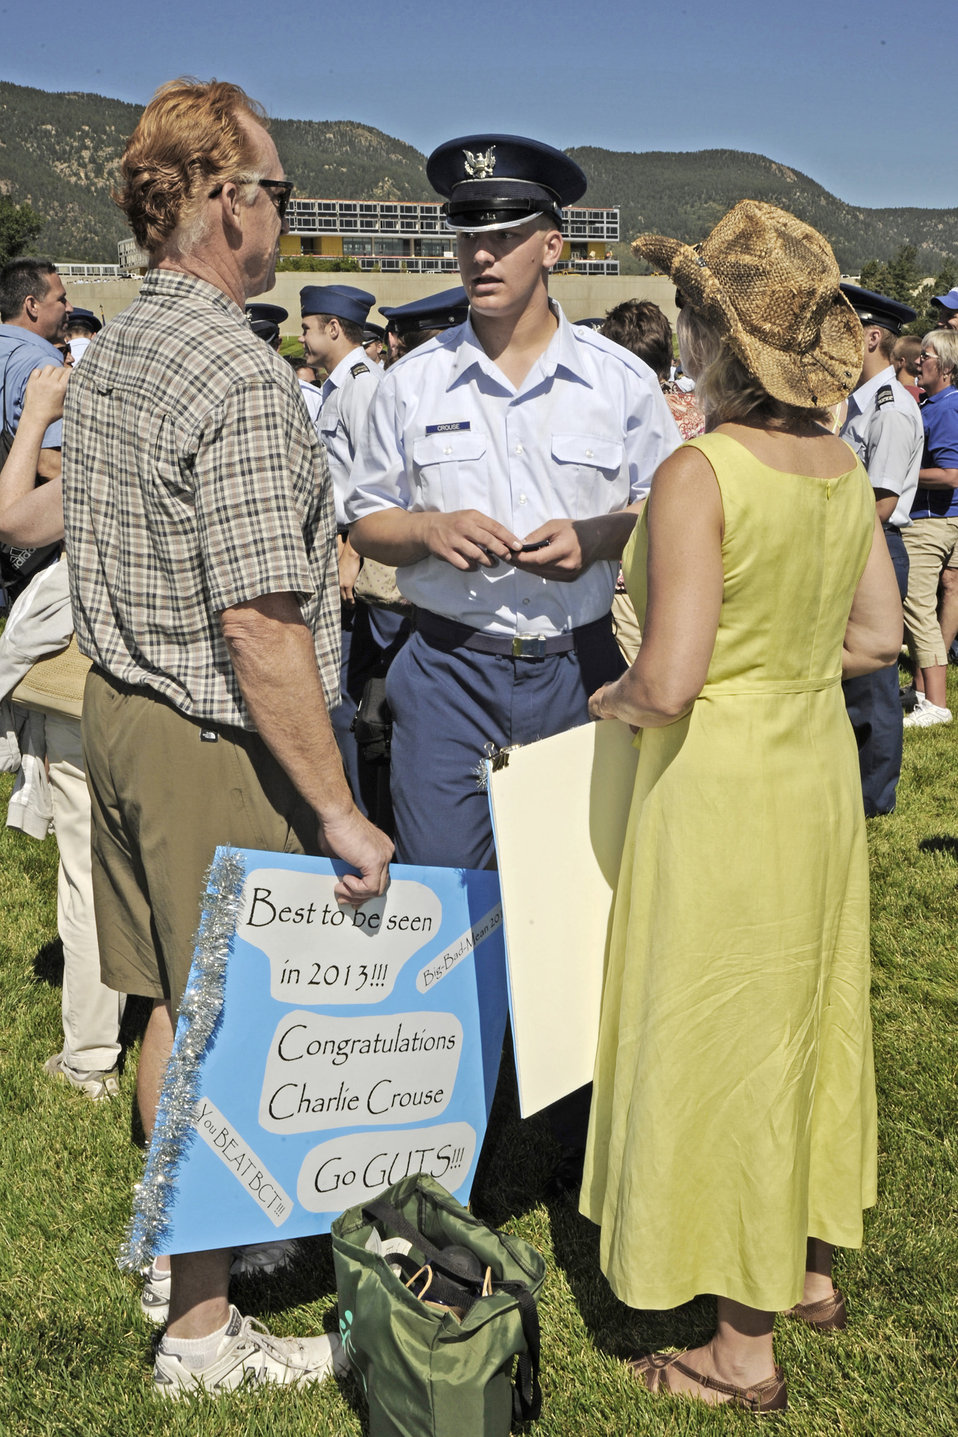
Acceptance Parade

USAF ACADEMY, CO--Cadet 4th Class Crouse, a member of the Academy's Class of 2013, receives congratulations from his parents following the Acceptance Parade Wednesday . The parade marks the official end of Basic Cadet Training and formally welcomes the new class into the cadet wing.